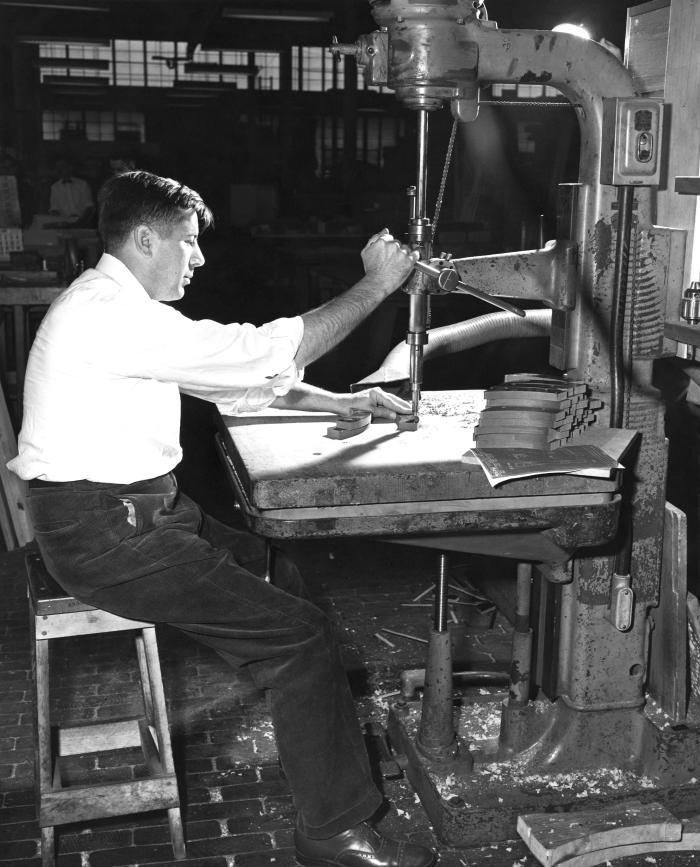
This historical 1953 photograph was provided by the Center for Disease Control's (CDC), National Institute for Occupational Safety and Health (NIOSH). Inside the Baltimore, Maryland Crown Cork and Seal Co., this image depicted a seated industrial worker using a drill press that was equipped with a counter-bore attachment. Note that particulates liberated during the manufacturing process, were vented away from the worker by a vacuum hose, located off to the man's left, but which was maneauverable, and could be positioned wherever it would have been most efficient. This worker was in the process of creating a bolt hole by using the counter-boring device. This man was not wearing any other protective gear such as goggles, gloves, or a filtered breathing mask.